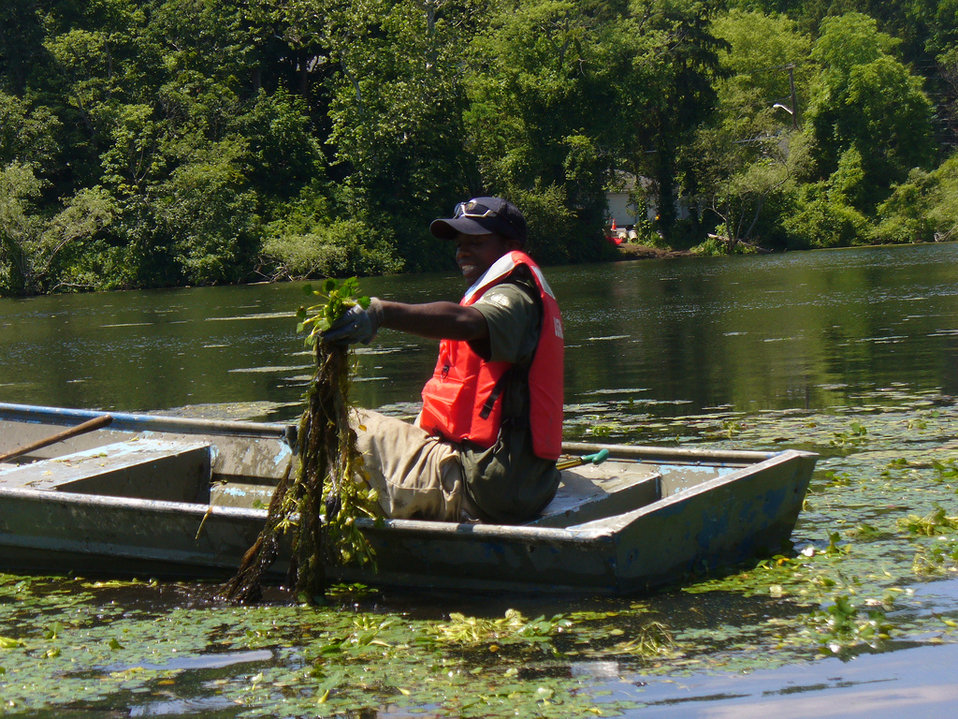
Pulling invasive species

U.S. Fish and Wildlife Service